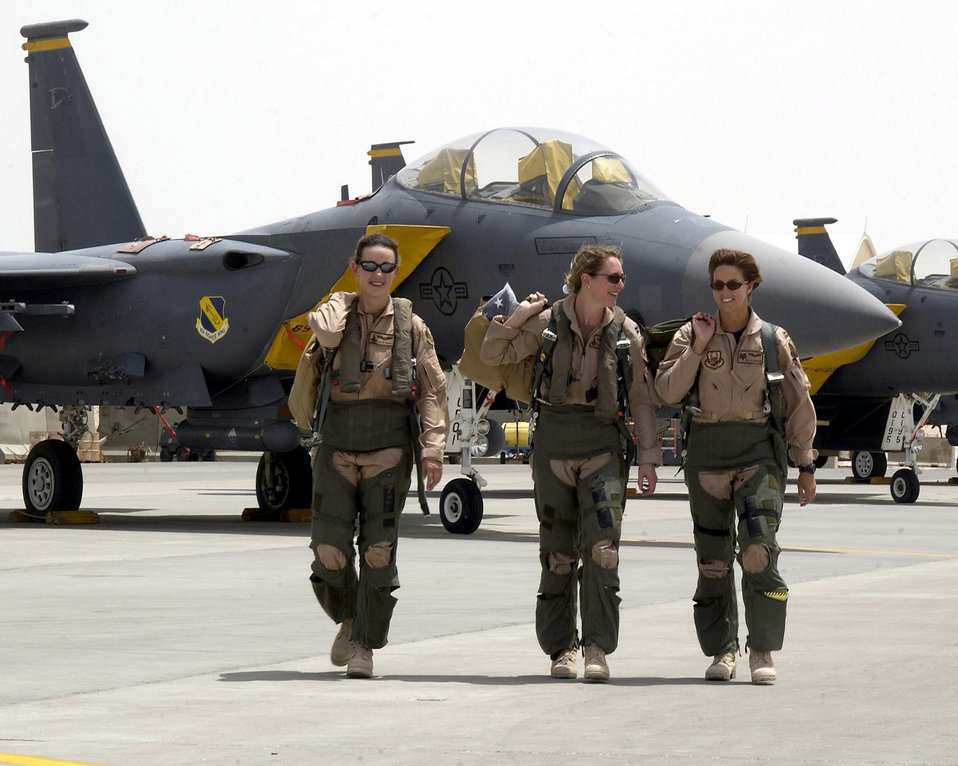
Fighter trio

OPERATION IRAQI FREEDOM (AFPN) -- From left to right, 1st Lt. Julie Ayres and Capts. Mary Melfi and Tally Parham walk down the flightline at a forward-deployed air base in the Middle East on May 3. The three officers are assigned to the 379th Air Expeditionary Wing and flew combat missions during Operation Iraqi Freedom. Ayres and Melfi are F-15E Strike Eagle weapons system officers deployed from the 336th Expeditionary Fighter Squadron at Seymour Johnson Air Force Base, N.C. Parham is an F-16 Fighting Falcon pilot from the 157th Expeditionary Fighter Squadron of the South Carolina Air National Guard at McEntire Air National Guard Base.